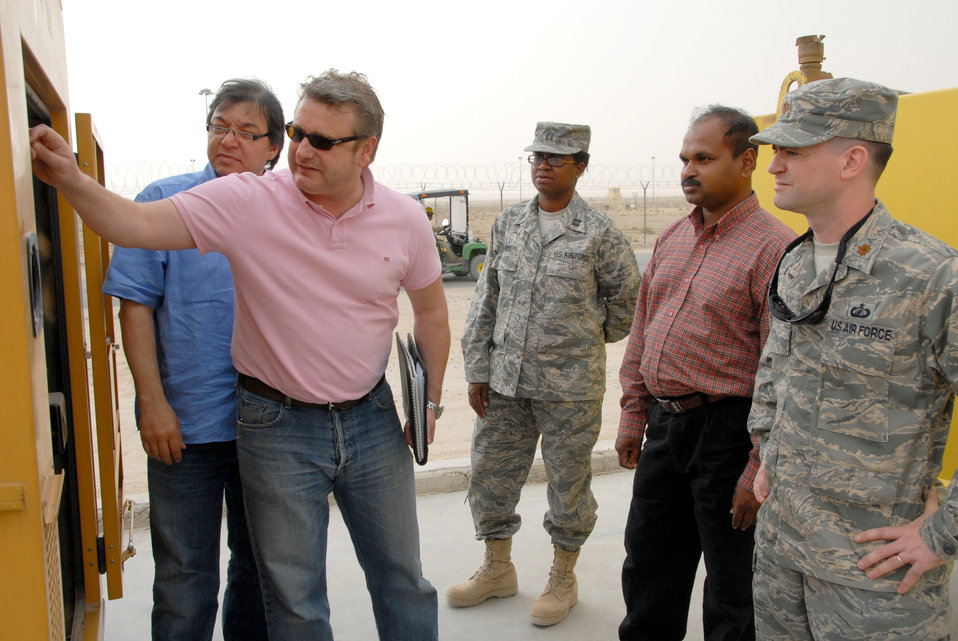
Innovative idea saves nearly $400,000

A contractor describes the functions on a generator procured by the Air Force to Maj. Tim Hawkins, Capt. Lisa Gambrel and other contractors April 12 at a Southwest Asia air base. Airmen from the 386th Expeditionary Contracting Squadron used an innovative method to procure 29 generators, called electronic reverse auctioning, to save the Air Force $395,000. Major Hawkins is the 386th ECONS commander and Captain Gambrel is a 386th ECONS contracting officer.